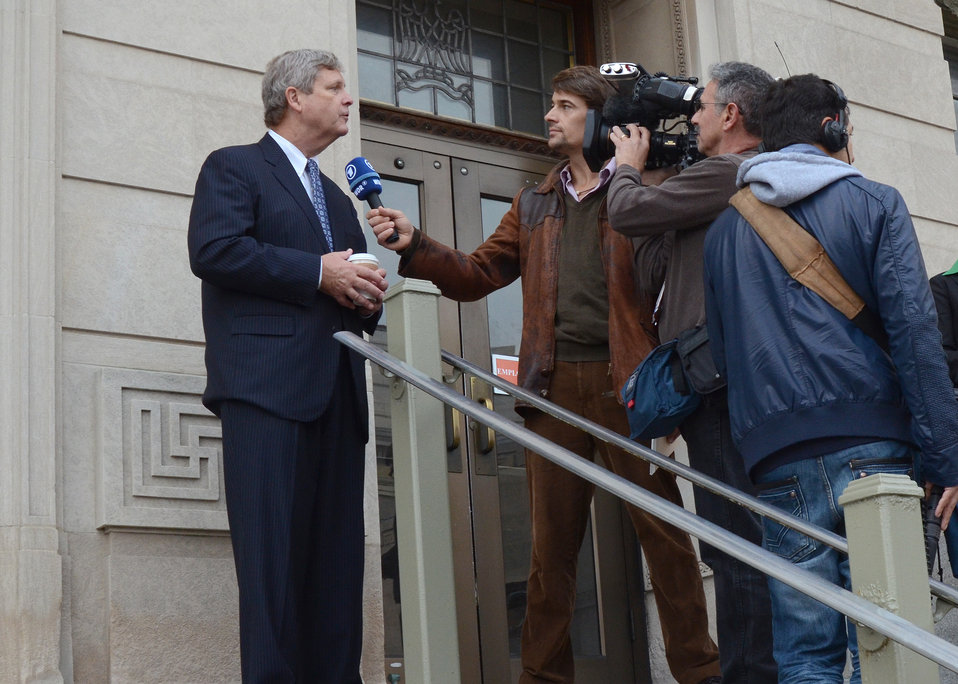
Agriculture Secretary Tom Vilsack speaks to reporters on the steps of the U.S. Department of Agriculture's South Building on Thursday, Oct. 18, 2013.